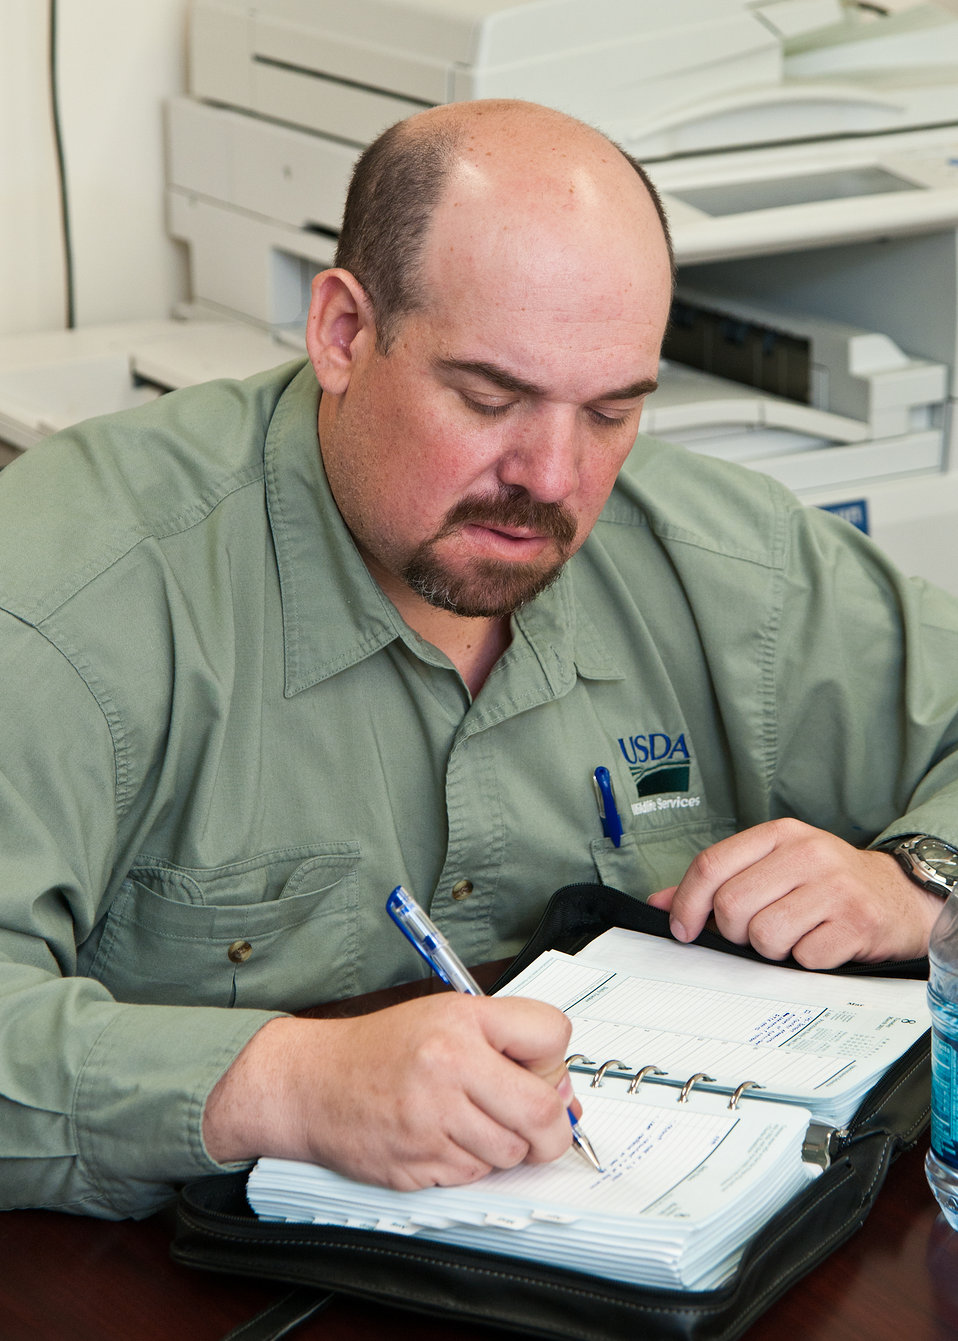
110308 APHIS RBN 2577

Chris Bowser, Wildlife Biologist, Logistical Support, Animal and Plant Health Inspection Service, Wildlife Services records observations and feedback during a debriefing on his detail to Iraq participating in a program initiated by USDA, APHIS and U.S. Air Force Central to assist in keeping runway operations free of wildlife, at the U.S. Department of Agriculture in Washington, D.C., on Tuesday, March 8, 2011.